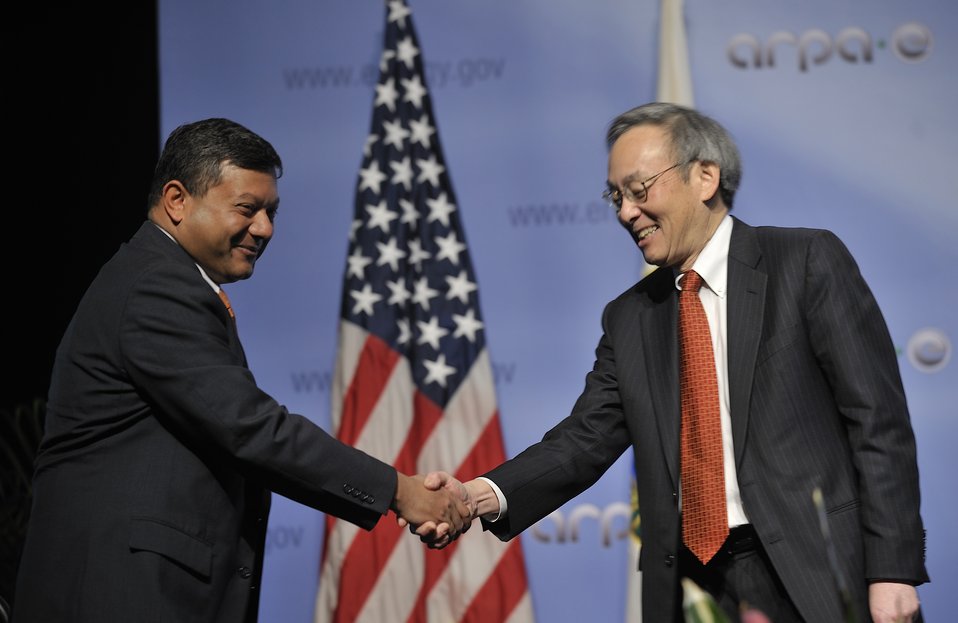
ARPA-E Energy Innovation Summit 2011, 25 of 83

Steven Chu, Secretary, United States Department of Energy and Dr. Arun Majumdar, Director, ARPA-E shakes hands as Dr. Majumdar takes the stage for his keynote.